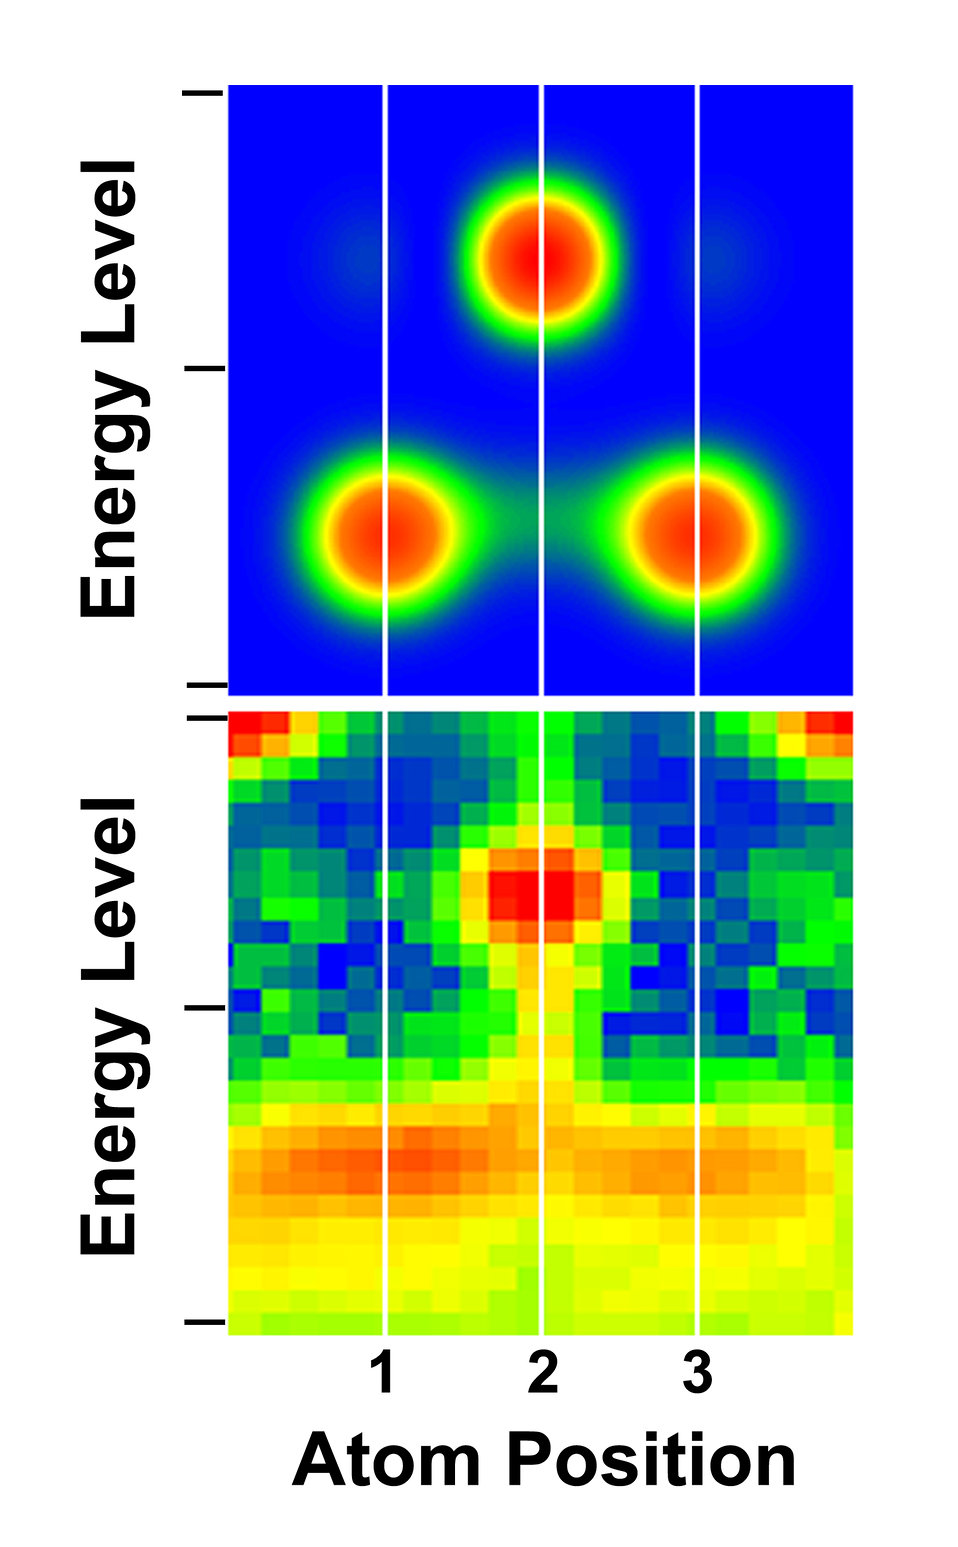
Quantum Physics; Nanoscale Assembly; Atomic Anchors

These two images show the energy levels (vertical scale) and spatial positions (white lines) of electrons within a three-atom chain. The top image shows the calculated or theoretical results; the bottom image shows the measured energy levels in a physical experiment. Electrons are most likely to be located in the red areas and least likely in the blue areas. Both images indicate that the electrons in the outermost atoms (positioned on the far left and right at the bottom on the vertical scales) have lower energy than those within the center atom.